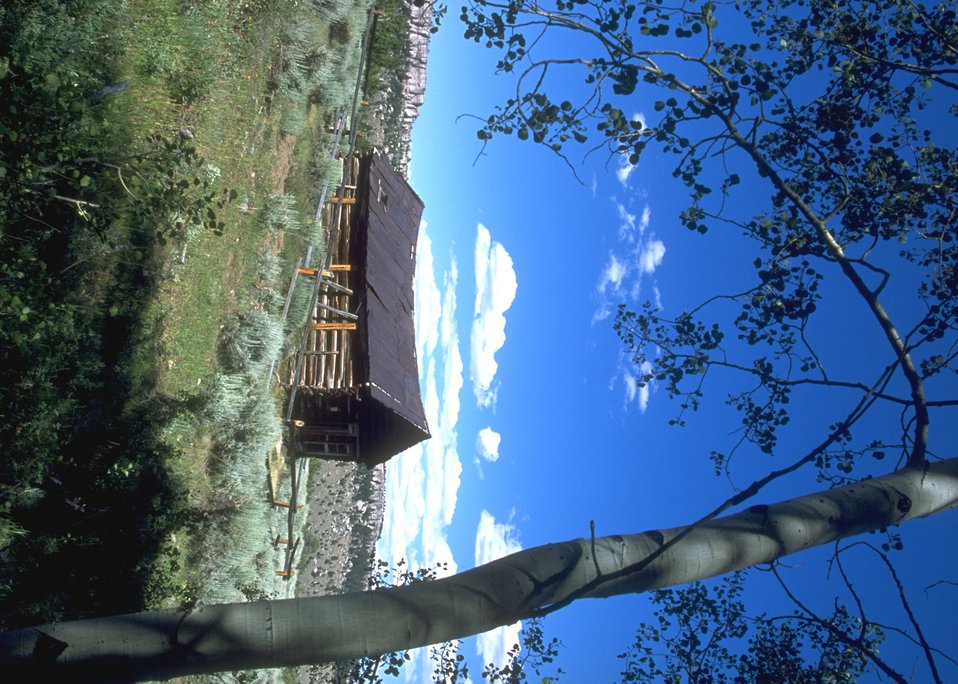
Structures at Miners Delight, Lander Field Office.